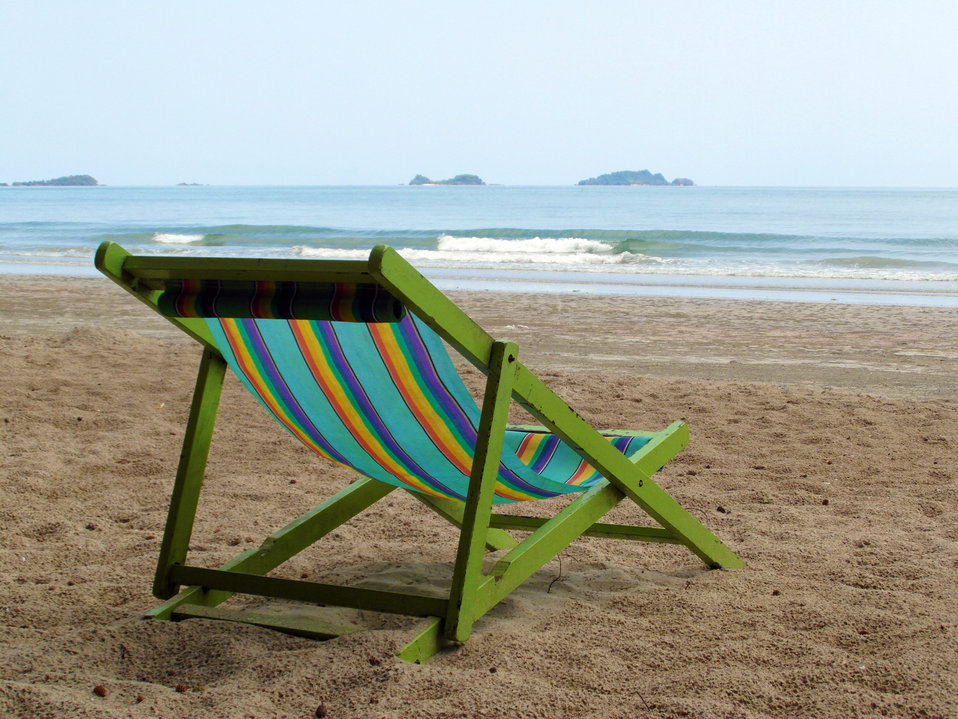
Deckchair on an empty beach

Deckchair on an empty tropical beach.